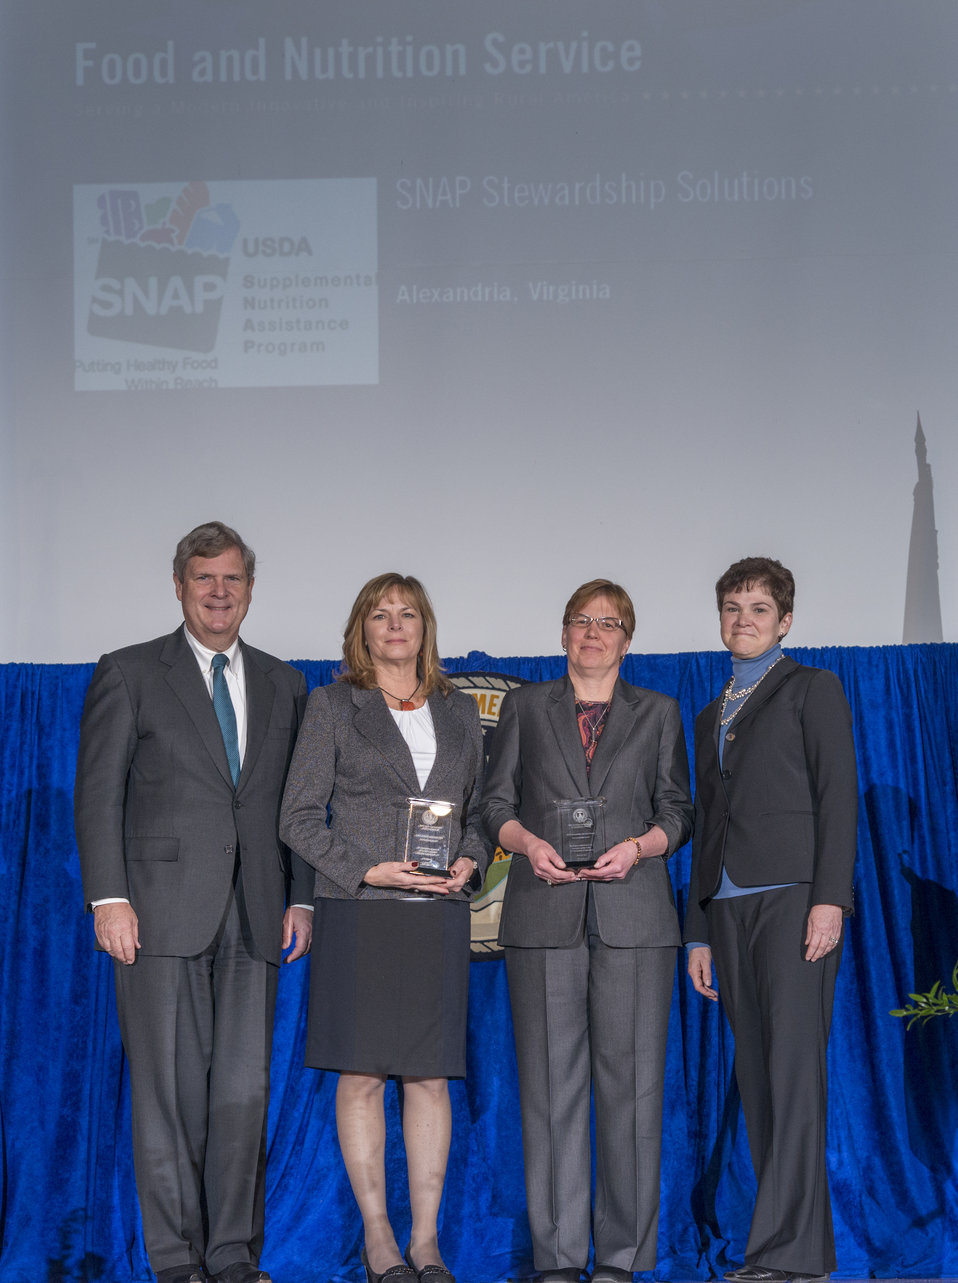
Agriculture Secretary Tom Vilsack and Agriculture Deputy Secretary Krysta Harden present the Secretary’s Honor Award to Supplemental Nutrition Assistance Program (SNAP) Stewardship Solutions Project, Food and Nutrition Service from Alexandria, VA Group leaders Andrea Gold and Ronald Ward (accepting Neva Terry) for implementing the SNAP Stewardship Solutions Project to strengthen program integrity and protect the American taxpayer's investment in the nation's critical nutrition assistance safety net at the 2013 Honor Awards in the Jefferson Auditorium at the U.S. Department of Agriculture (USDA) in Washington, D.C. on Wednesday, Dec. 11, 2013.